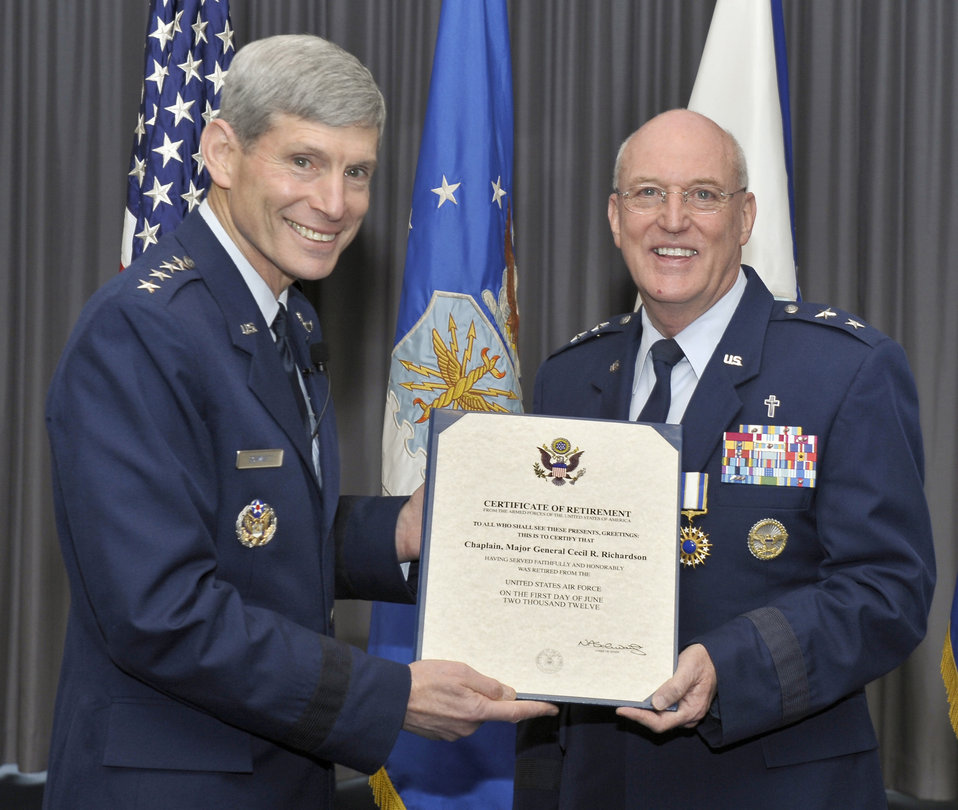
Top Air Force chaplain retires after 40-year career

Air Force Chief of Staff Gen. Norton Schwartz congratulates Maj. Gen. Cecil Richardson during his retirement ceremony April 30, 2012, at Joint Base Anacostia-Bolling, D.C. Richardson was the Air Force Chief of Chaplains at the time of his retirement.